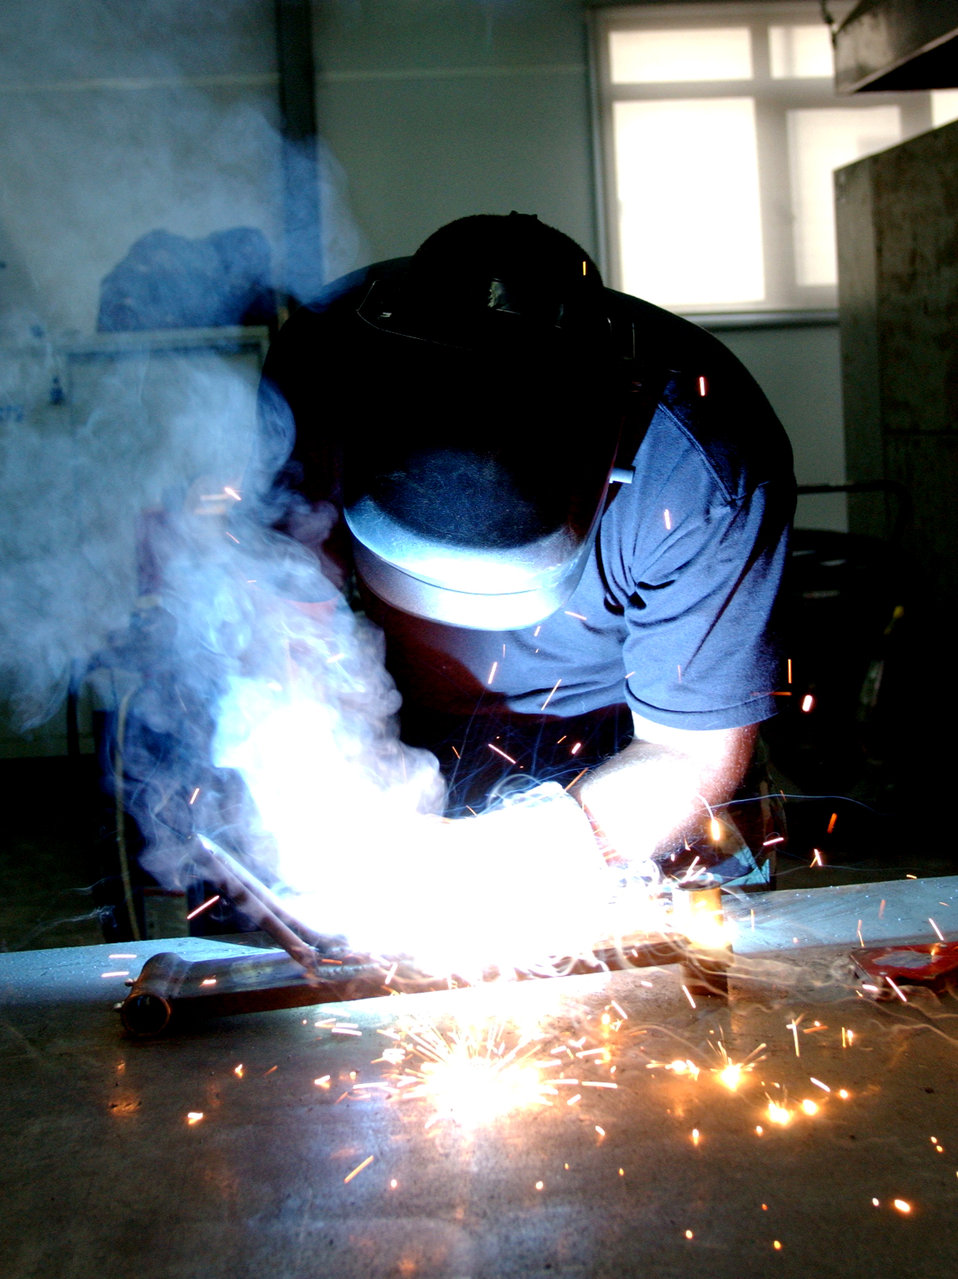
Feel the sparks

INCIRLICK AIR BASE, Turkey -- Staff Sgt. George Chapin welds a piece of equipment here recently. He is an aircriaft metals technician with the 39th Maintenance Squadron.